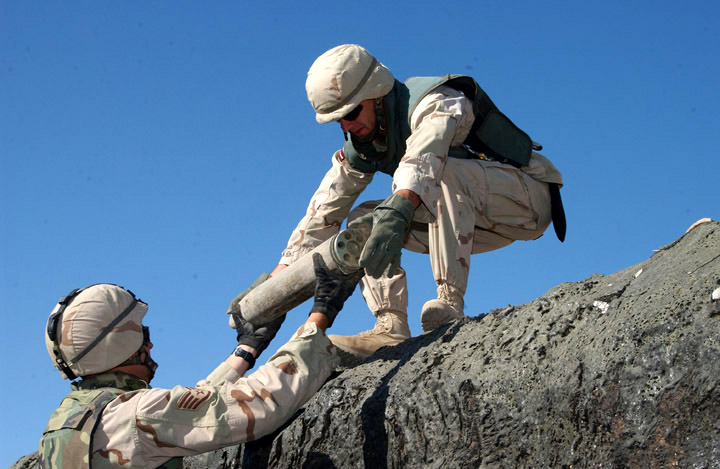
Fire in the hole

KIRKUK AIR BASE, Iraq -- Latvian First Sgt. Renars Vandinskis hands Staff Sgt. Lonny Ellison a 107 mm rocket to be destroyed. Explosive ordnance disposal technicians destroyed 12 of the rockets found in downtown Kirkuk on Nov. 4. Such rockets have recently been fired toward military installations in the area. Six Latvian servicemembers are integrated into the 506th Air Expeditionary Group EOD team to form a coalition force tasked with locating and destroying unexploded ordnance. Since July, the team has destroyed more than 3 million pounds of Iraqi ordnance. Vandinskis and Ellison are both EOD technicians with the 506th Civil Engineer Squadron.